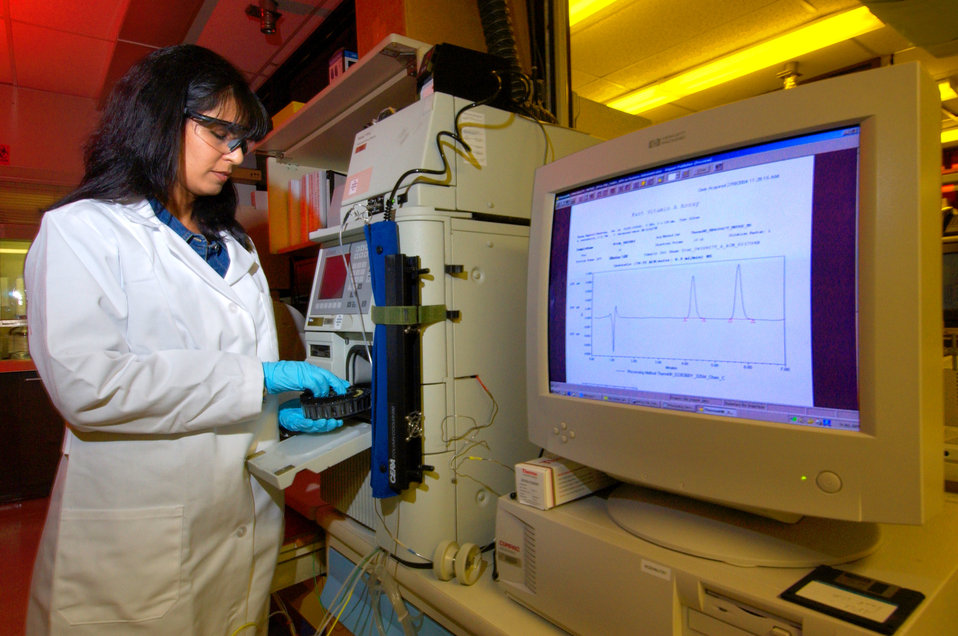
This photograph showed CDC chemist Madhulika Chaudhary-Webb, preparing a High Performance Liquid Chromatography (HPLC) instrument in order to analyze the concentrations of vitamin A present in a serum sample, while using a 'rapid method' of analysis, in the Personal Care Products Laboratory located in a CDC lab on the organization's Chamblee, Georgia campus.